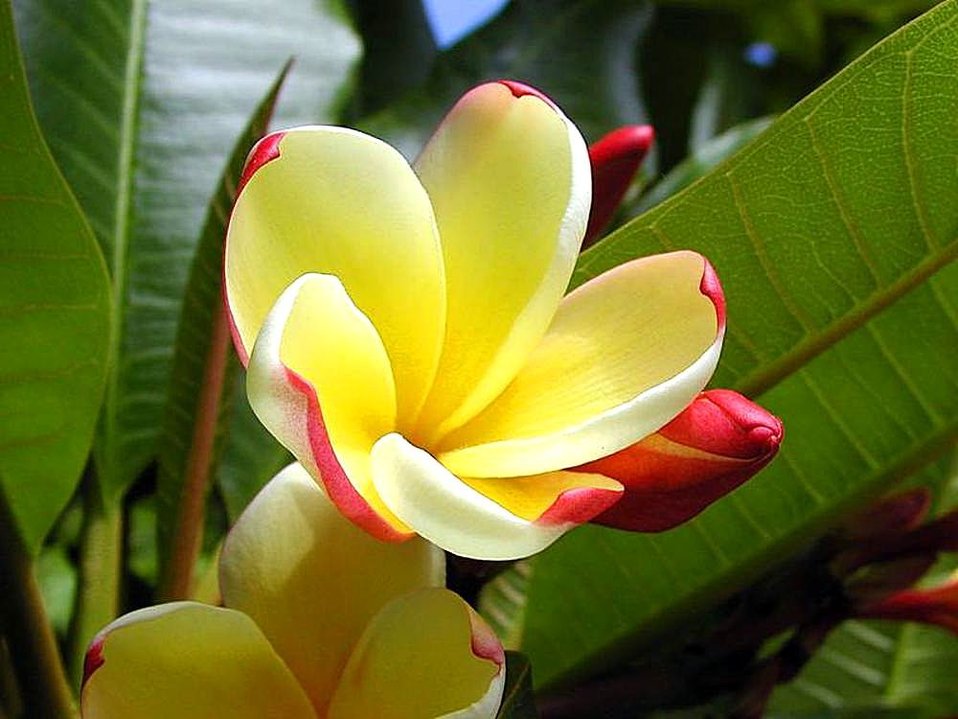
English:
Image title: Beautiful yellow flower Image from Public domain images website, http://www.public-domain-image.com/full-image/flora-plants-public-domain-images-pictures/flowers-public-domain-images-pictures/beautiful-yellow-flower.jpg.html